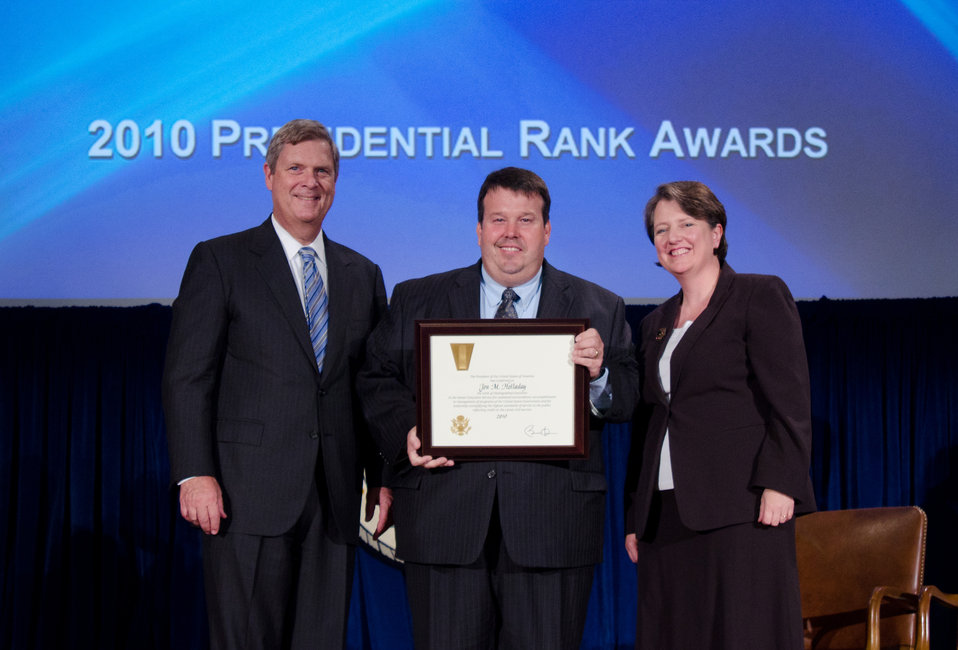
Agriculture Secretary Tom Vilsack (l) and Deputy Secretary Kathleen Merrigan (r), presents the Distinguished Executive Award to Jon M. Holladay, Deputy Chief Financial Officer, Office of Chief Financial Office. The President of the United States of America has conferred on Jon M. Holladay the rank of Distinguished Executive in the Senior Executive Service for sustained extraordinary accomplishment in management of progress of the United States Government and for leadership exemplifying the highest standards of service to the public reflecting credit o the career civil service. On Wednesday, September 14, 2011 in the Jefferson Auditorium at the US Department of Agriculture in Washington, DC.